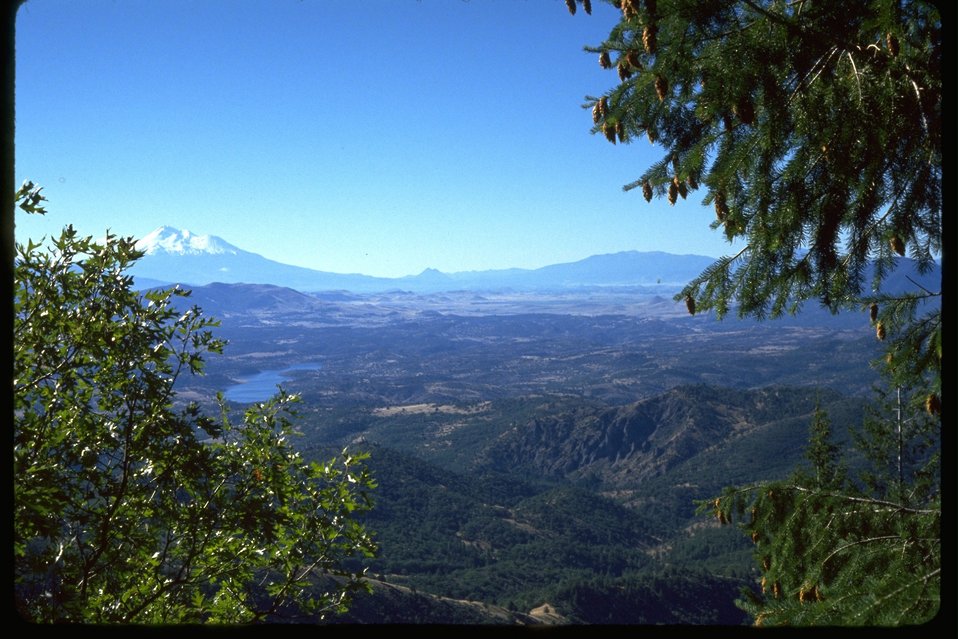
View point of Lower Camp Lake and Cathedral Cliffs, taken on edge of "tip of dagger.